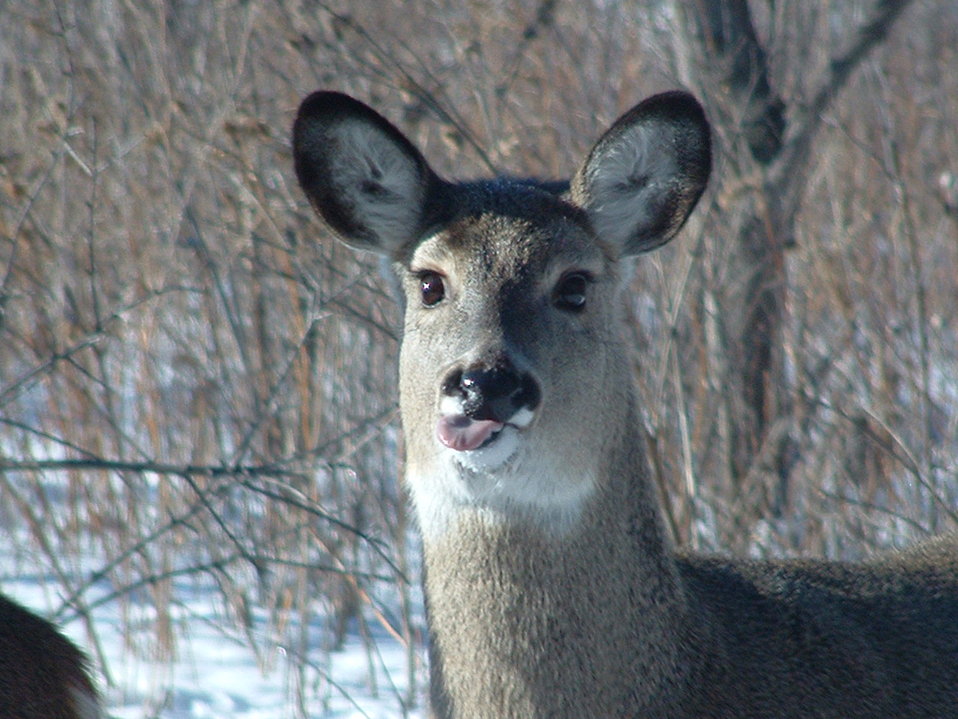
Oh Deer!

A white-tailed deer visits the Visitor Center at Waubay NWR looking for sunflower seeds that have fallen from the bird feeder. As long as the snow isn't too deep the deer are common visitors in the winter.